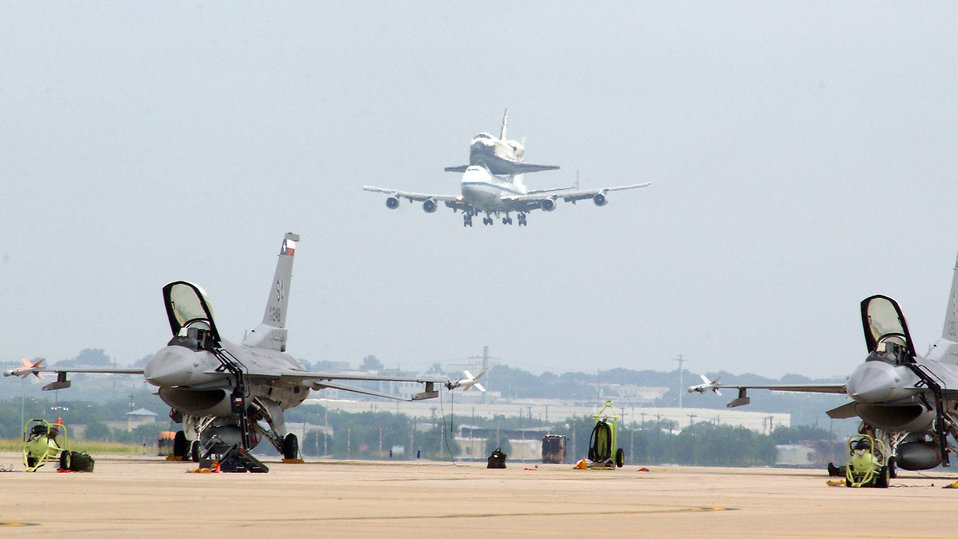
Photo essay: Shuttle transitions through Air Force bases

Space Shuttle Atlantis riding atop a NASA-modified Boeing 747 Shuttle Carrier Aircraft lands June 2 at Lackland Air Force Base, Texas. The shuttle was on its way back to NASA's Kennedy Space Center in Florida and stopped at Lackland AFB to refuel.